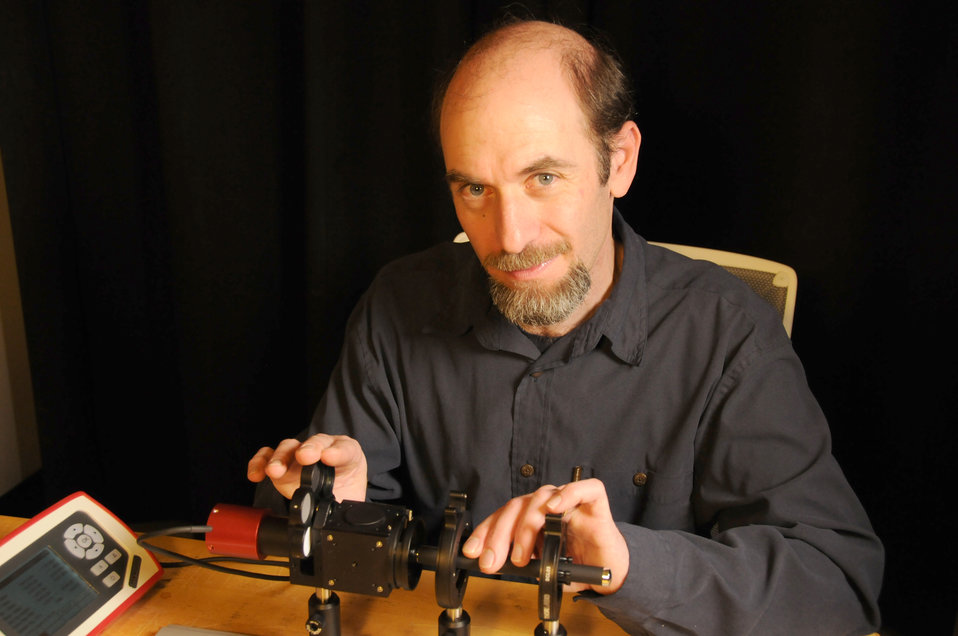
NIST laser safety officer Joshua Hadler and his apparatus for measuring the properties of handheld laser devices.